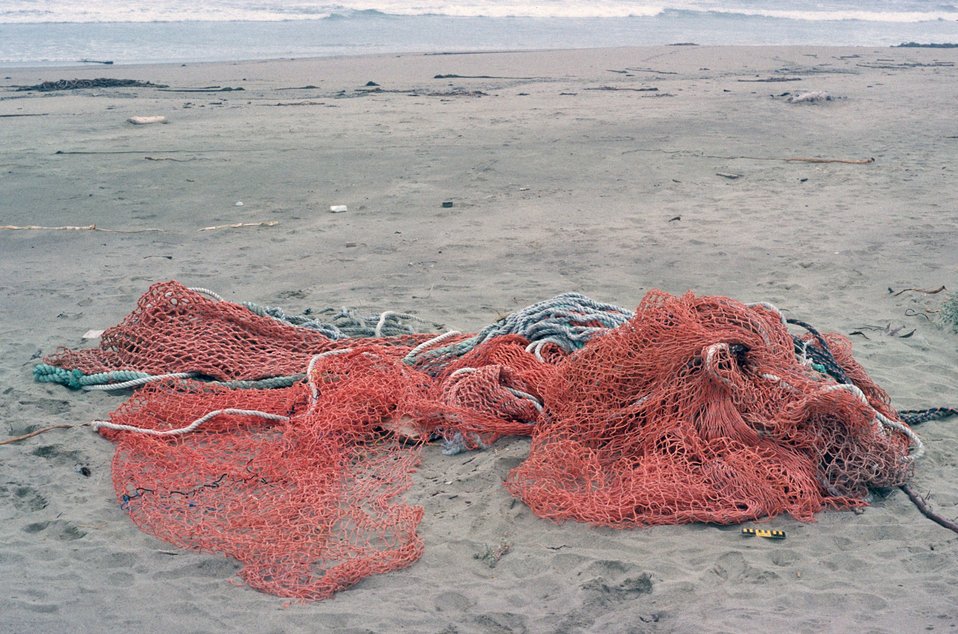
Point Reyes Great Beach. Marine debris ghost net washed up on beach.